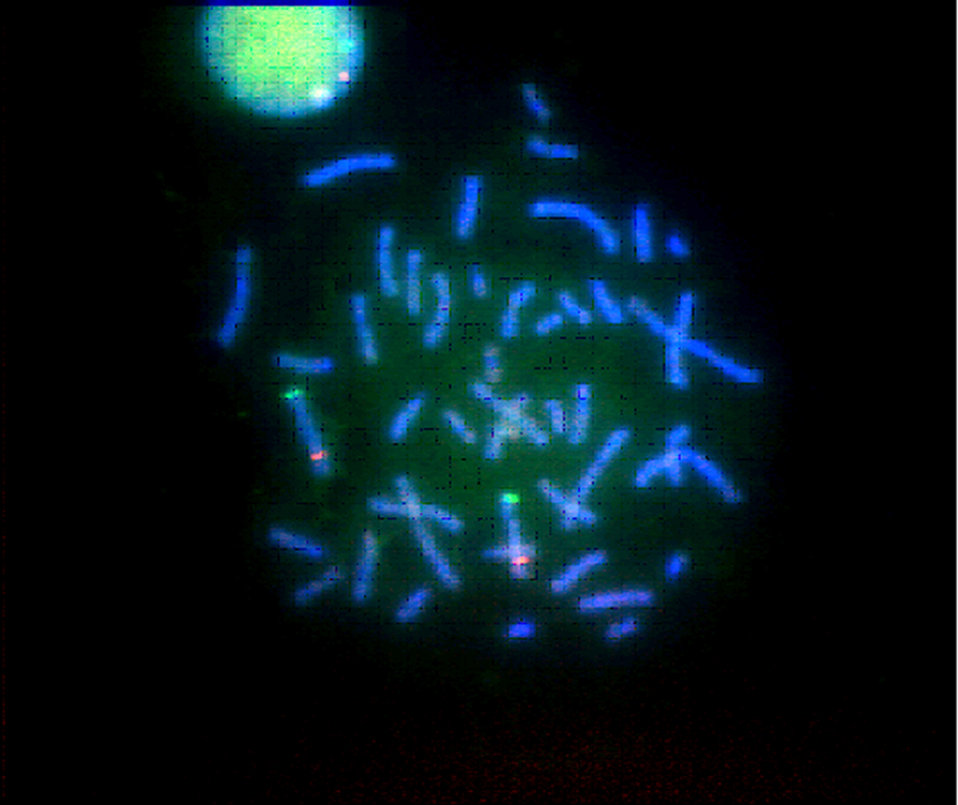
Nanotechnology; Fluorescent Nanodots

Tagging Faulty Genes With Fluorescent Nanodots